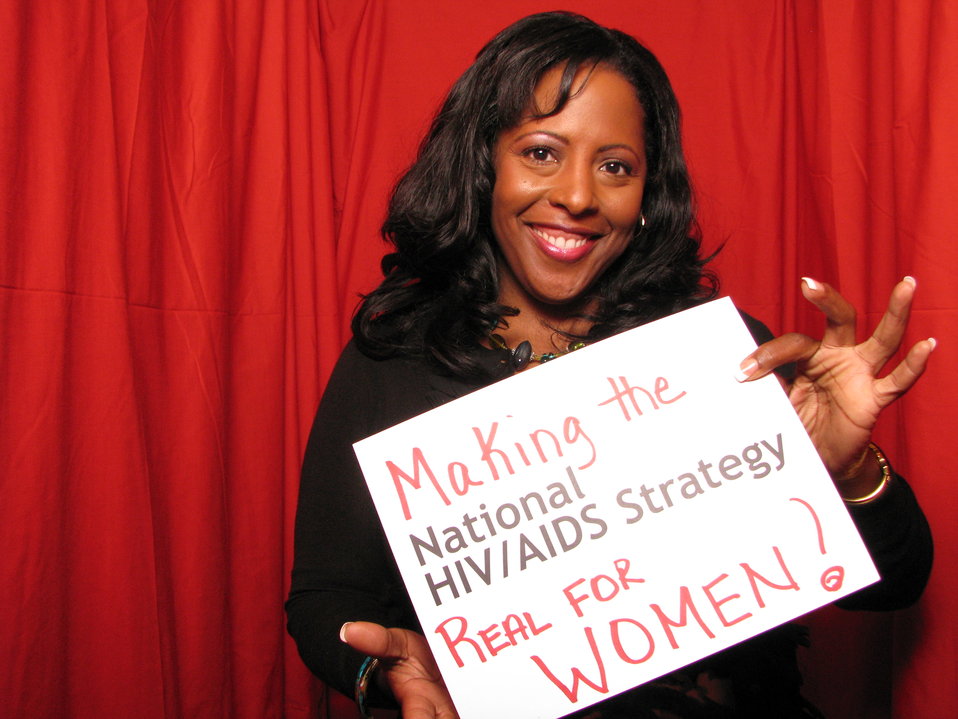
Making the National HIV/AIDS Strategy Real for WOMEN!

From the AIDS.gov photo booth at the U.S. Conference on AIDS, September 2010 (Orlando, FL).